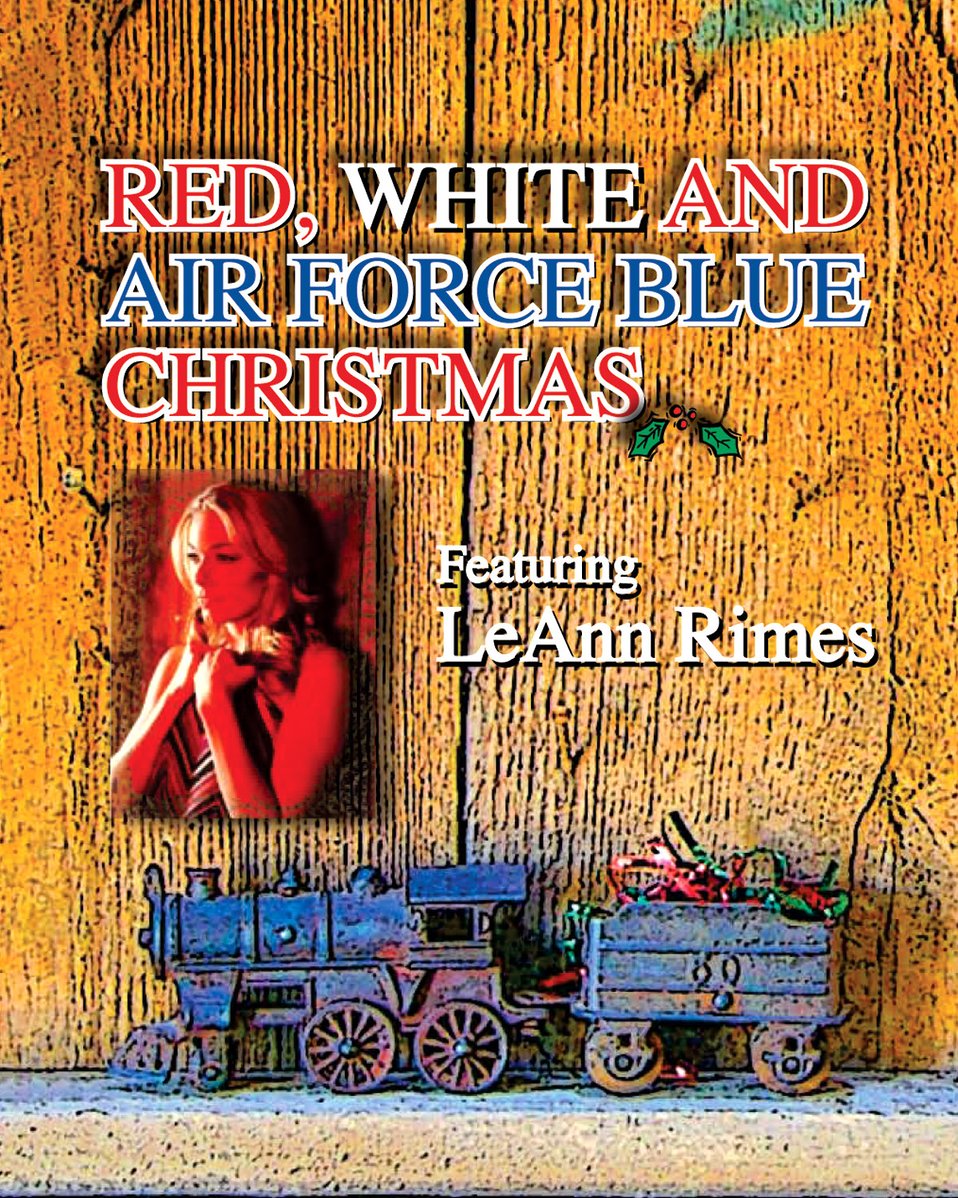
Christmas radio program arrives just in time for holidays

The cover of this year's